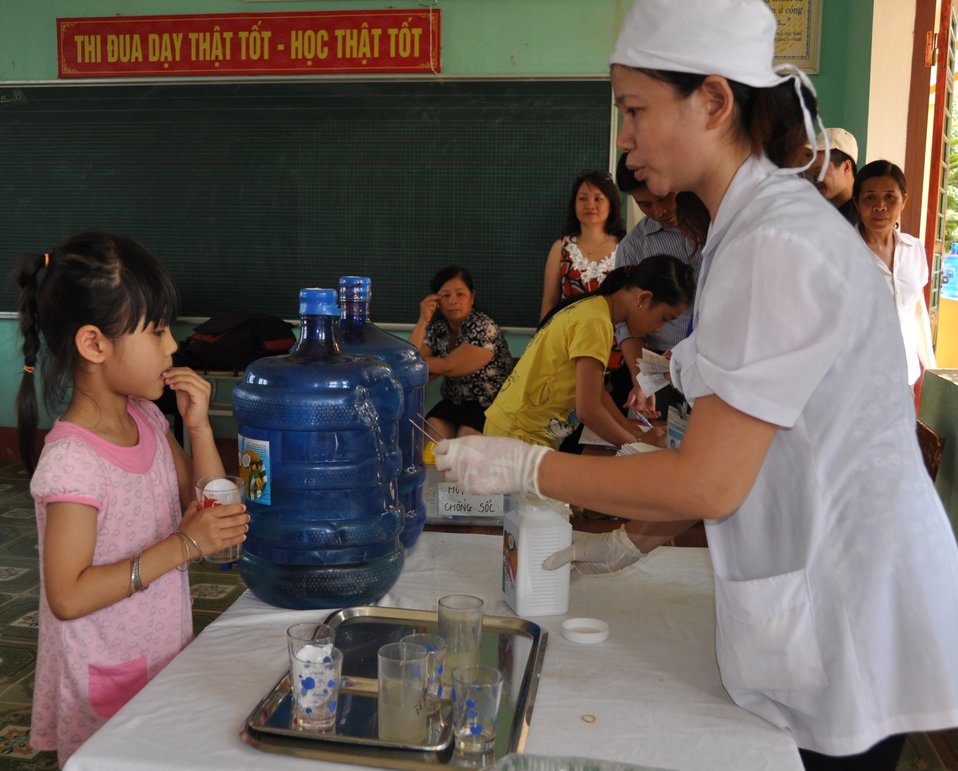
USAID supports deworming education and medication distribution in Bac Giang Province

May 20, 2013